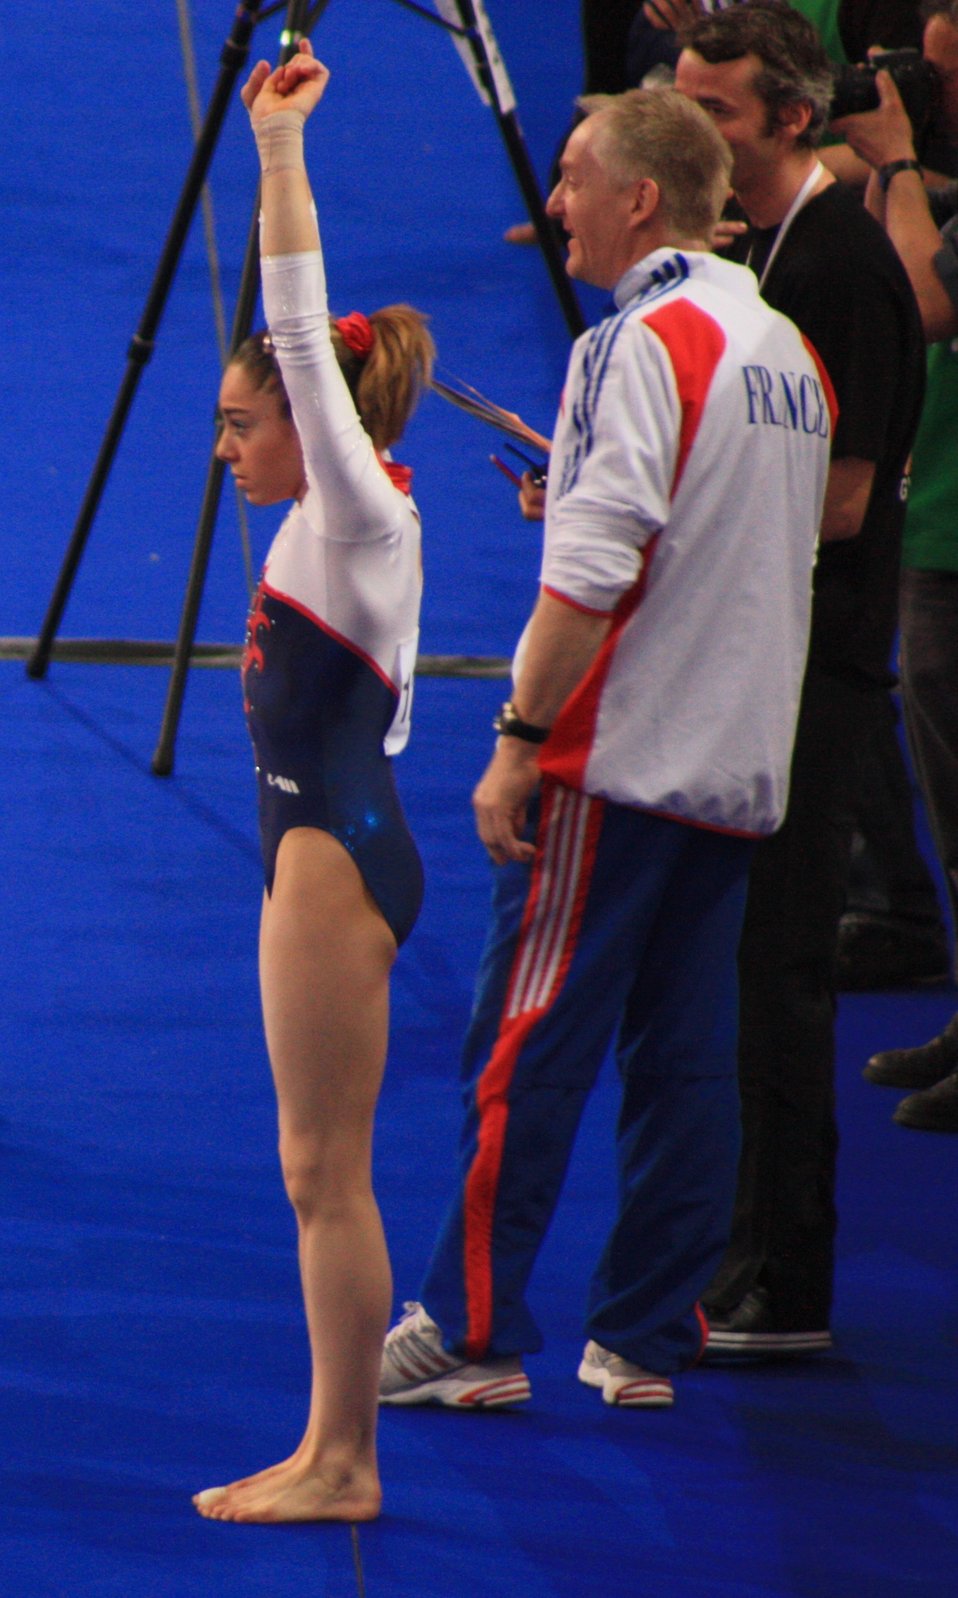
Fran√ßais†: Youna Dufournet s'√©tire. Internationaux de France 2010.